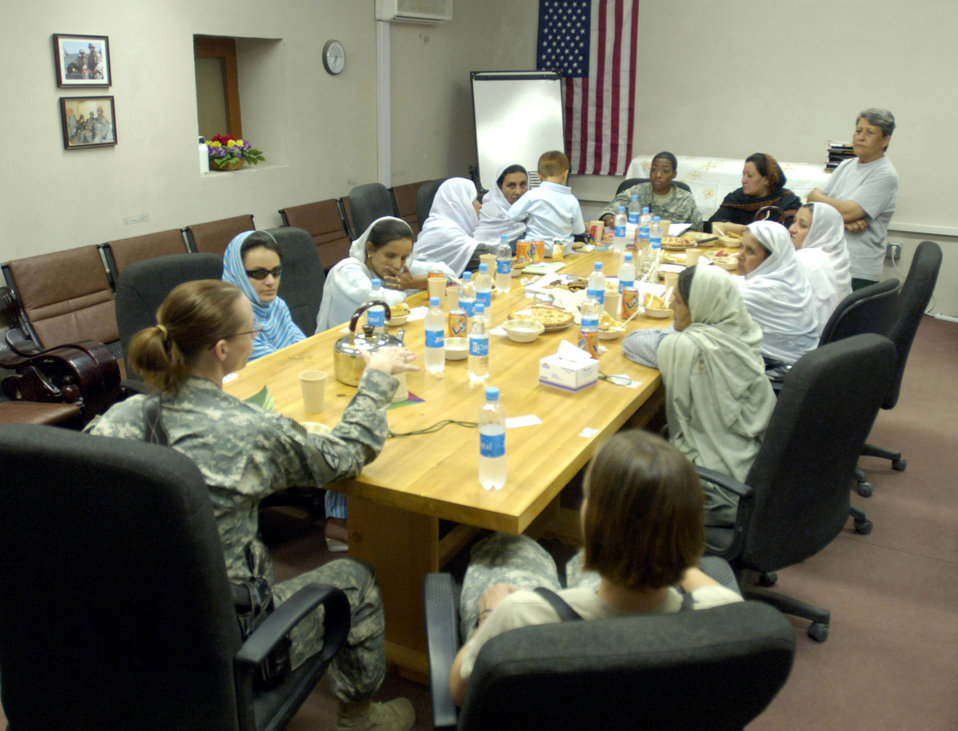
American, Afghan women join together for tea, discussion

U.S. female Airmen and Soldiers assigned to the Laghman Provincial Reconstruction Team host an afternoon tea Sept. 5 at Forward Operating Base Mehtar Lam for influential Afghan women living throughout Afghanistan's Laghman province. The tea provides an opportunity to educate the Afghan women on various humanitarian and security programs in place for them and their communities.